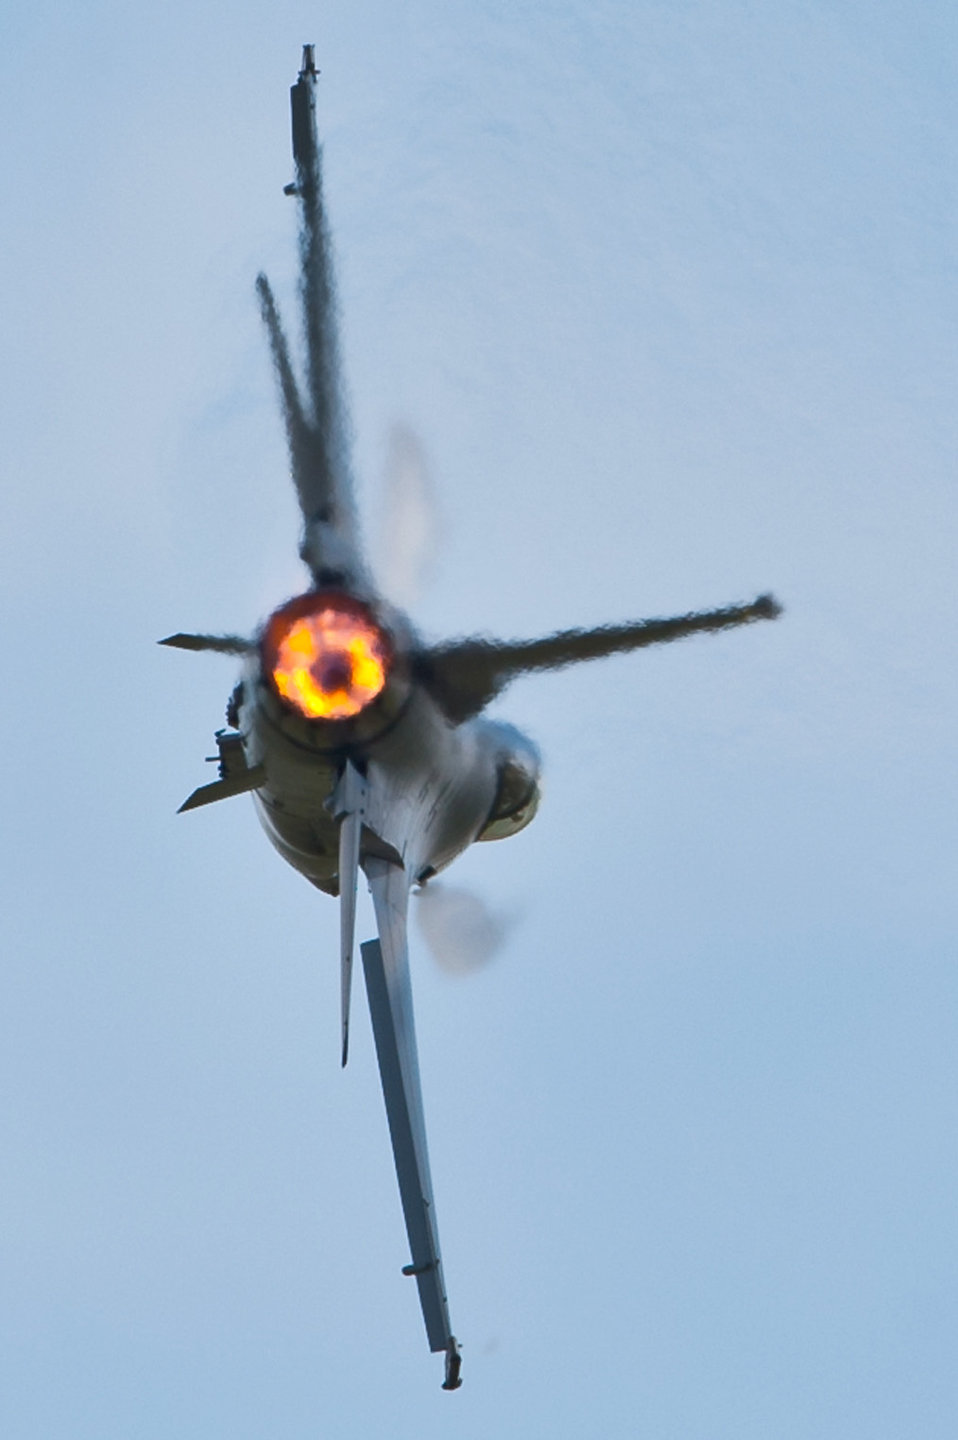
2011 Dakota Thunder air show

An F-16 Fighting Falcon flies June 4, 2011, during the 2011 Dakota Thunder air show at Ellsworth Air Force Base, S.D.